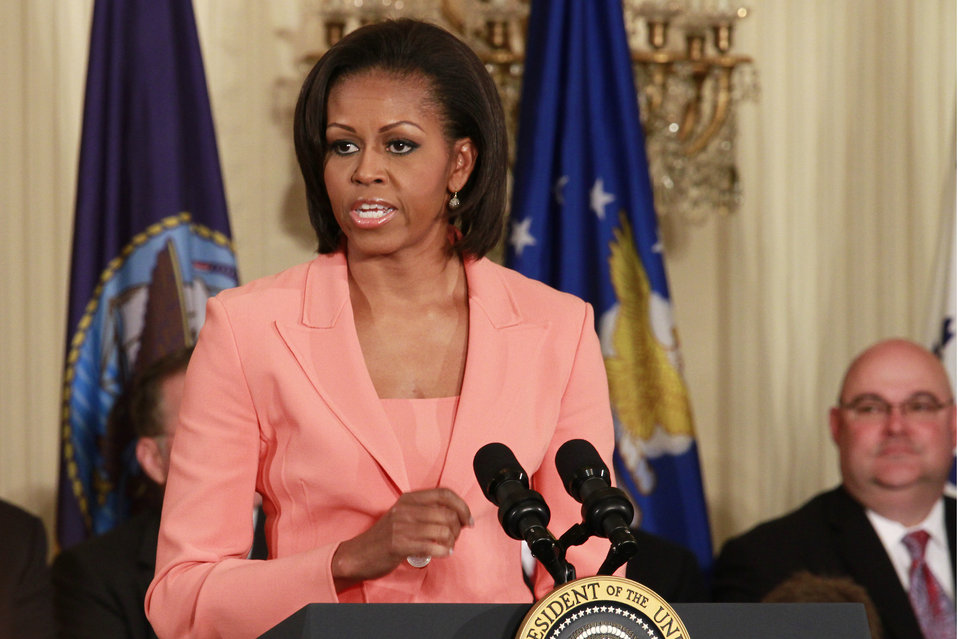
Joining Forces

First lady Michelle Obama urges all Americans to show their support for service members and their families April 12, 2011, during the launch of